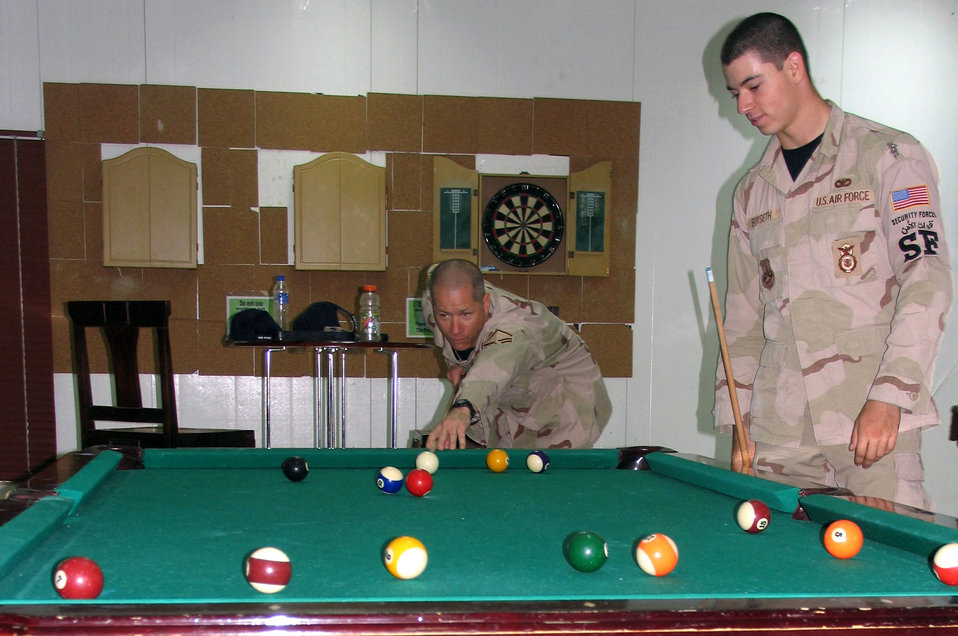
Father and son reunite in Southwest Asia

Senior Airman Jon Borseth II looks on as his father, Master Sgt. Jon Borseth, takes his next shot during a game of pool July 16 in Southwest Asia. Both Sergeant and Airman Borseth take every opportunity to spend time together during their deployment to the 386th Air Expeditionary Wing. When they redeploy, these opportunities will be few and far between as Sergeant Borseth will return to Aviano Air Base, Italy, and Airman Borseth to Edwards Air Force Base, Calif.